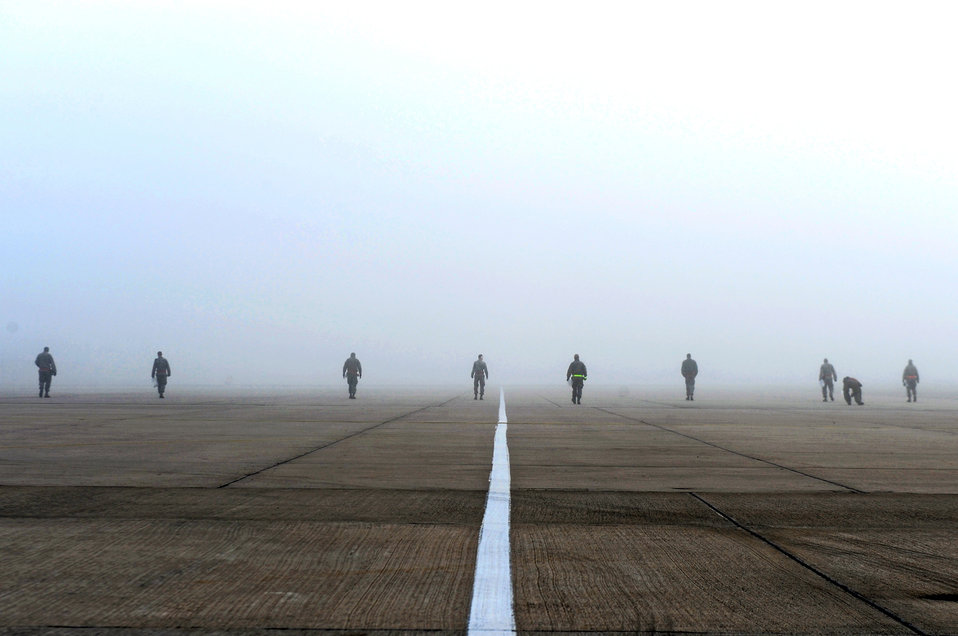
Walking the line

Airmen from the 86th Maintenance Squadron perform a foreign objects sweep Nov. 21, 2011, at Ramstein Air Base, Germany. The unit performs FOD sweeps three times a week to prevent objects from causing aircraft engine failures.